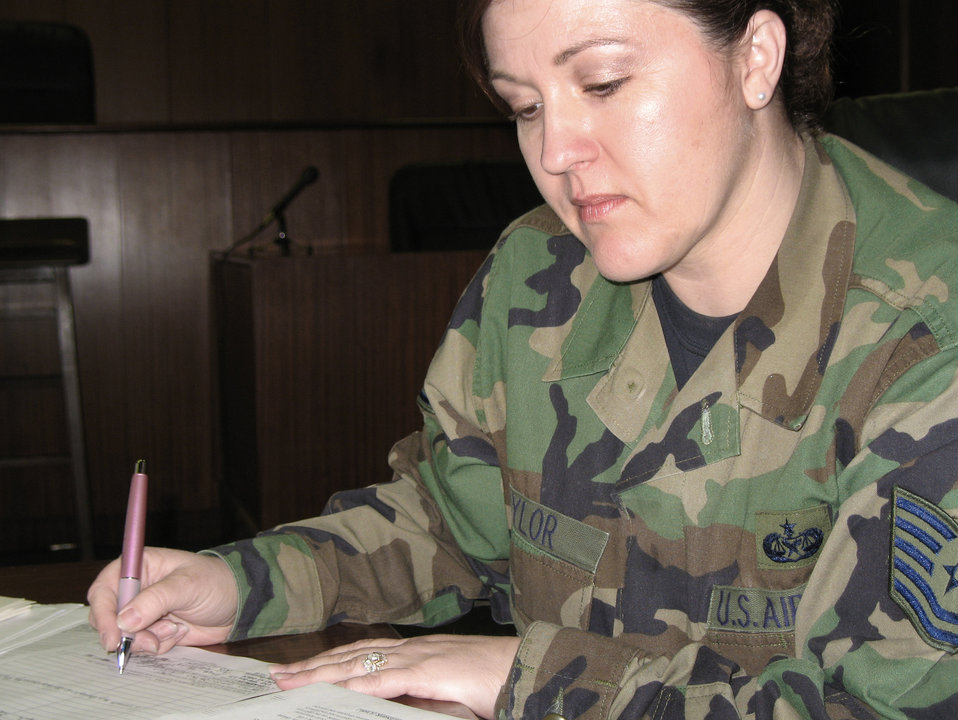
Processing claims streaming online

Tech. Sgt. Barbara Taylor puts the finishing touches on an Airman's household goods claim form March 26 at Incirlik Air Base, Turkey. The claim forms will be few and far between with the new virtual Air Force Claims Service Center in Dayton, Ohio. Members can conveniently log onto the Web site from their own home without the hassle of coming into the claims office.